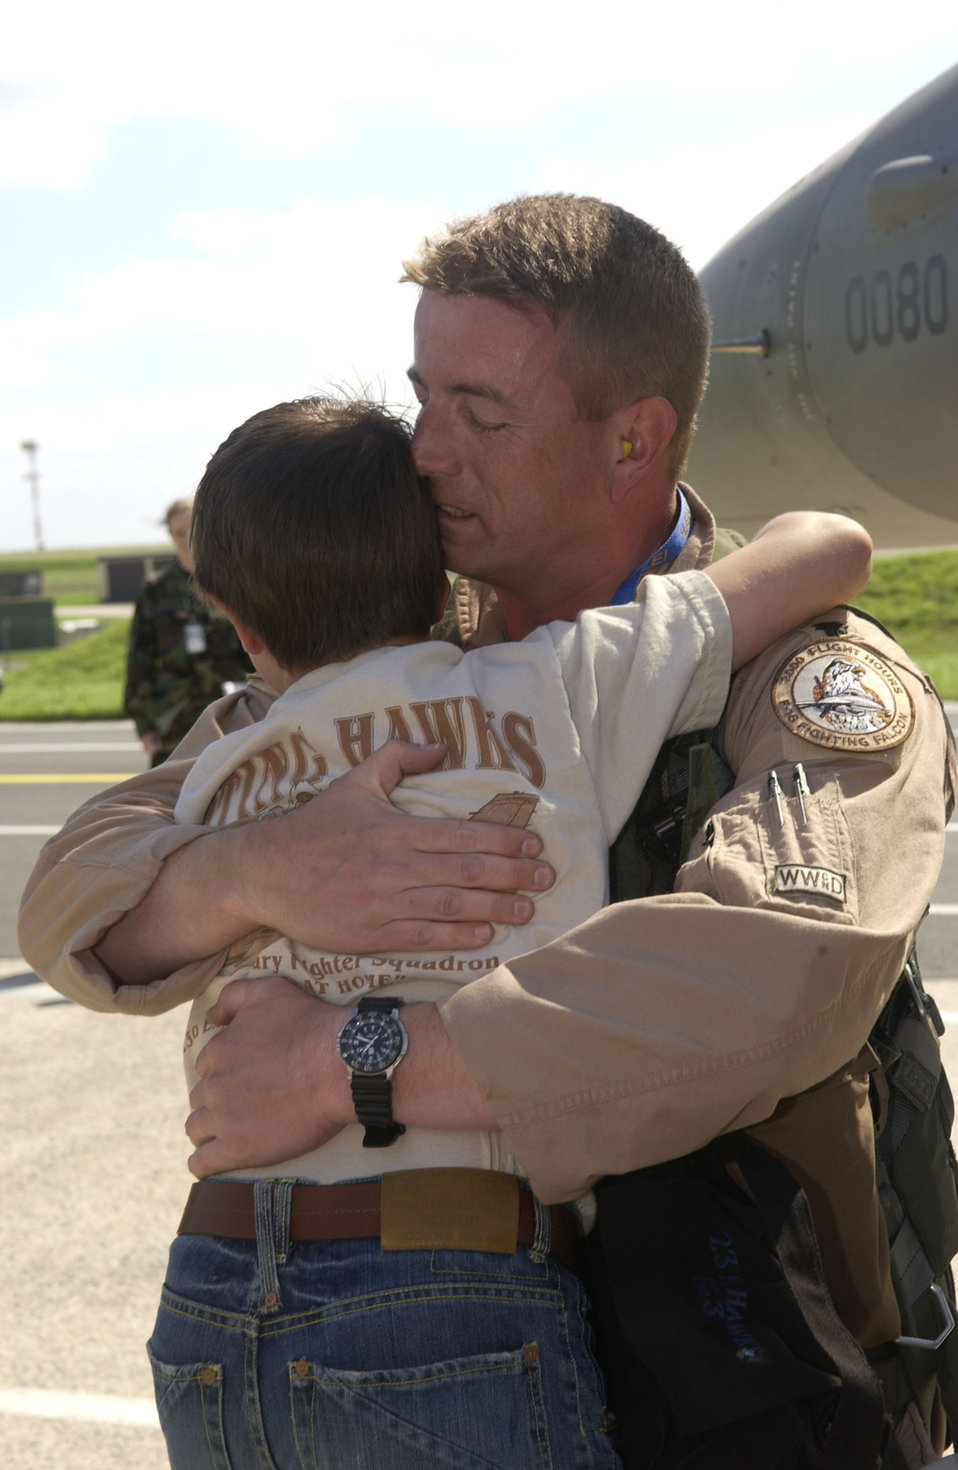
Home again

Lt. Col. William Woodcock hugs his 10-year-old son, Jacob, after the 23rd Fighter Squadron commander returned home to Spangdahlem Air Base, Germany, on Labor Day. Six of the squadron's F-16 Fighting Falcon jets returned home after a more than two month deployment to Southwest Asia. The unit provided close-air support to coalition forces in Iraq and Afghanistan. The flight back home took eight hours. The rest of the squadron will return home in the next week.